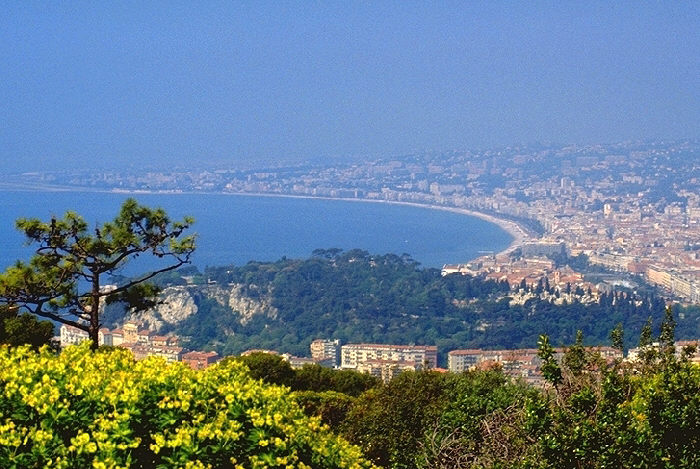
Nice, France, from Mont Boron.